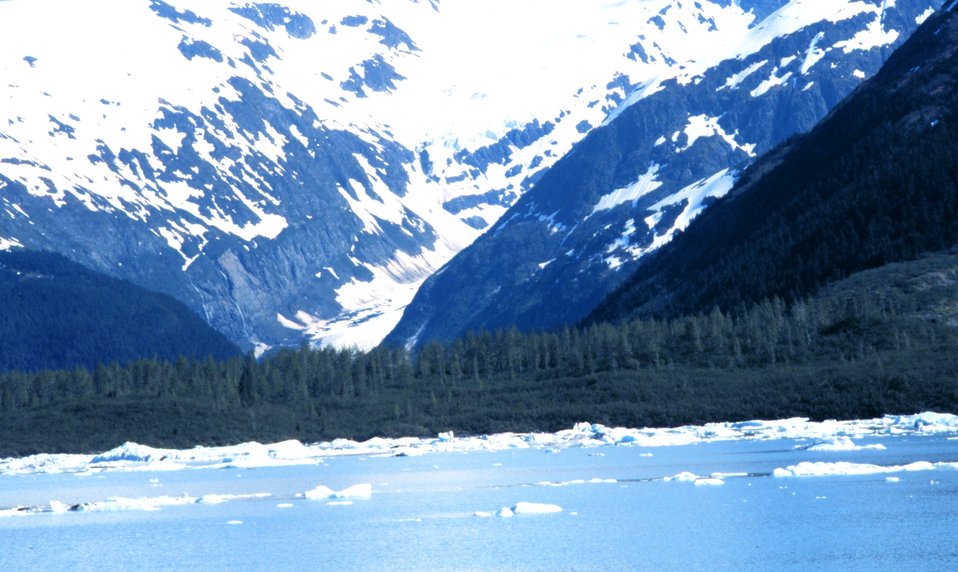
Coastal scene near Seward